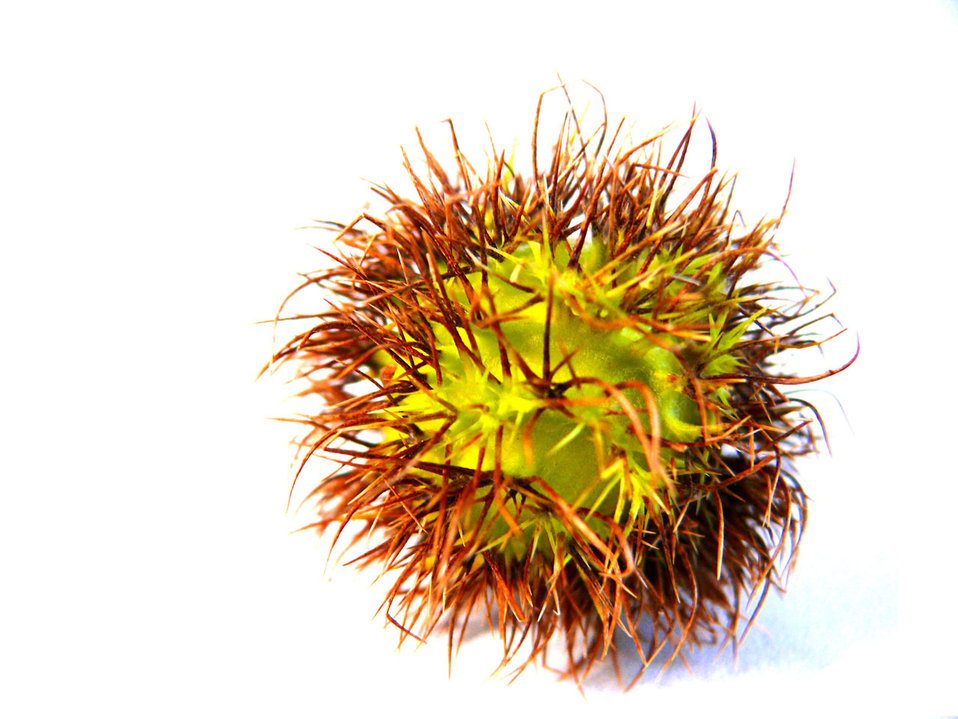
Nut on white backround.